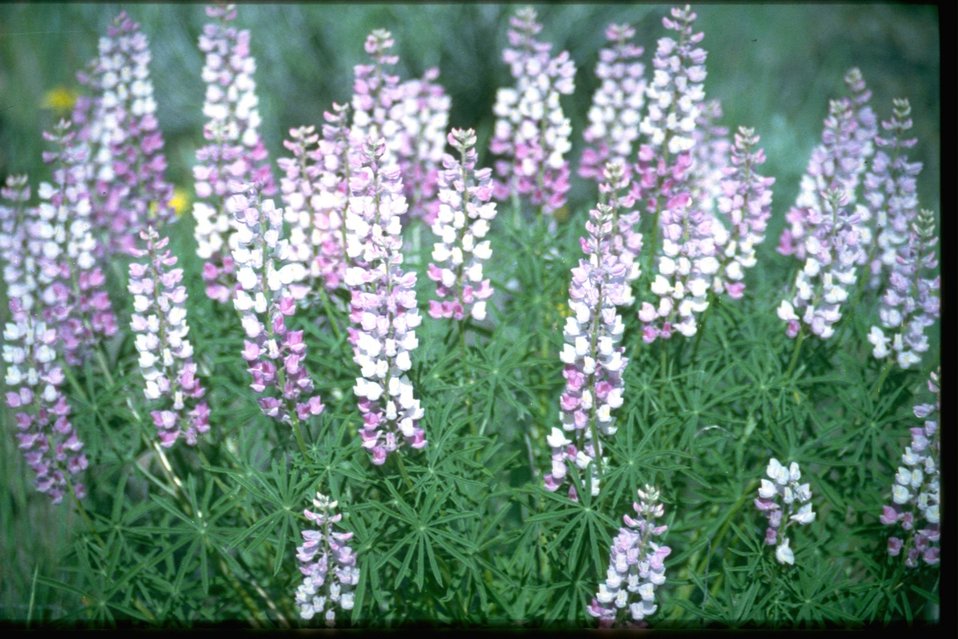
Close up picture of Lupine wildflowers.